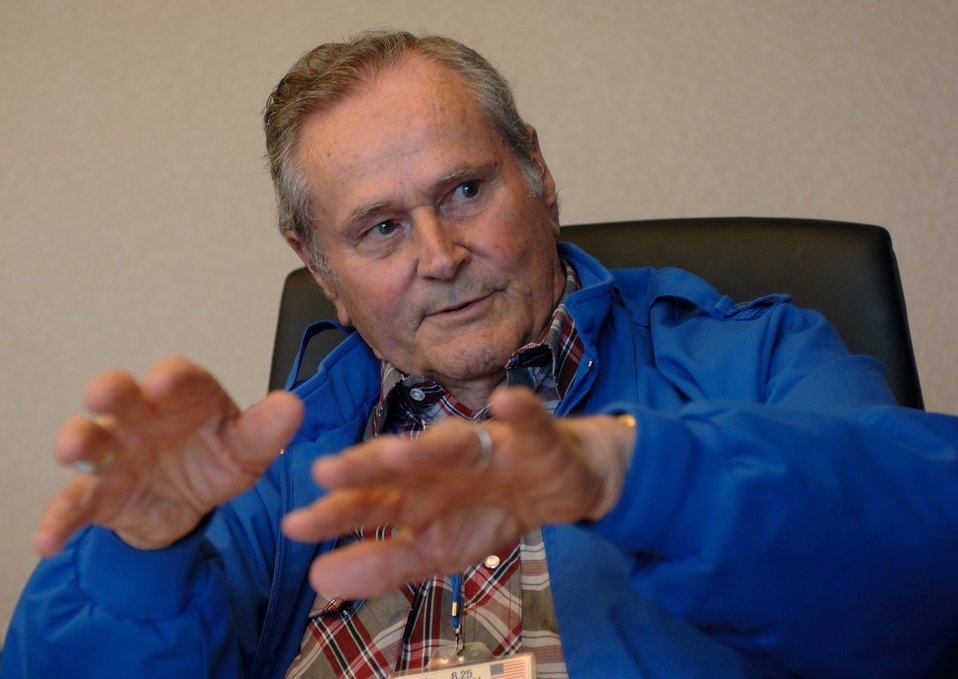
Revisiting the country of a forgotten war

Retired Col. Ralph Gibson demonstrates his maneuvers on how he obtained his fifth confirmed kill during aerial combat in the Korean War Sept. 10 at Seoul, South Korea. He and seven other Korean War veterans are visiting South Korea during a weeklong tour in observance of the Air Force's 60th Anniversary.